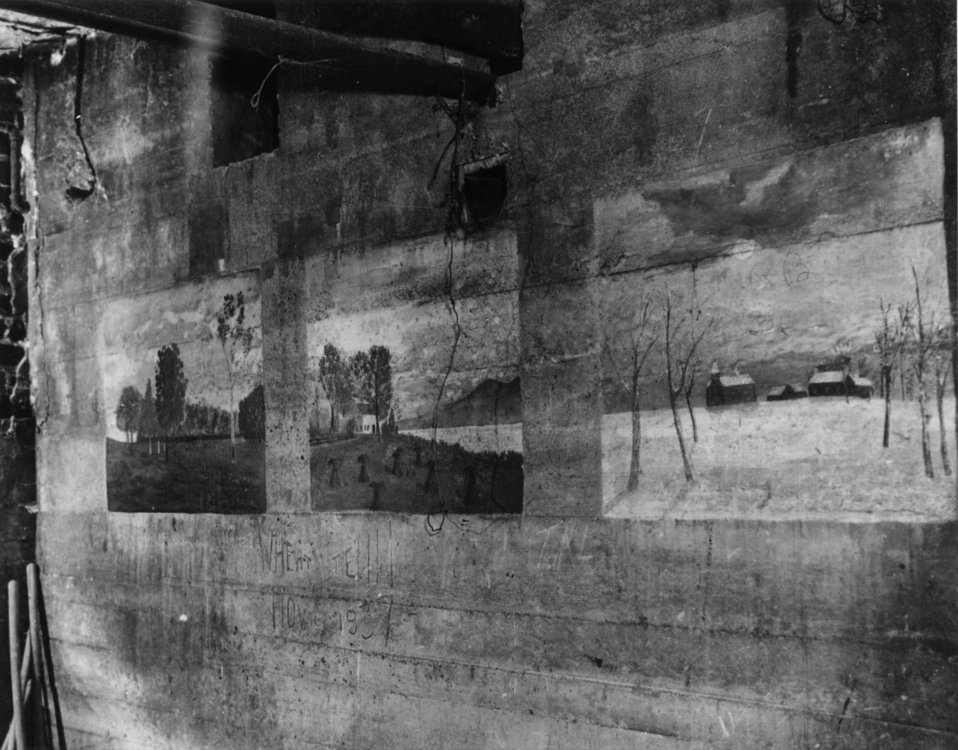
Early settlers at Oak Ridge